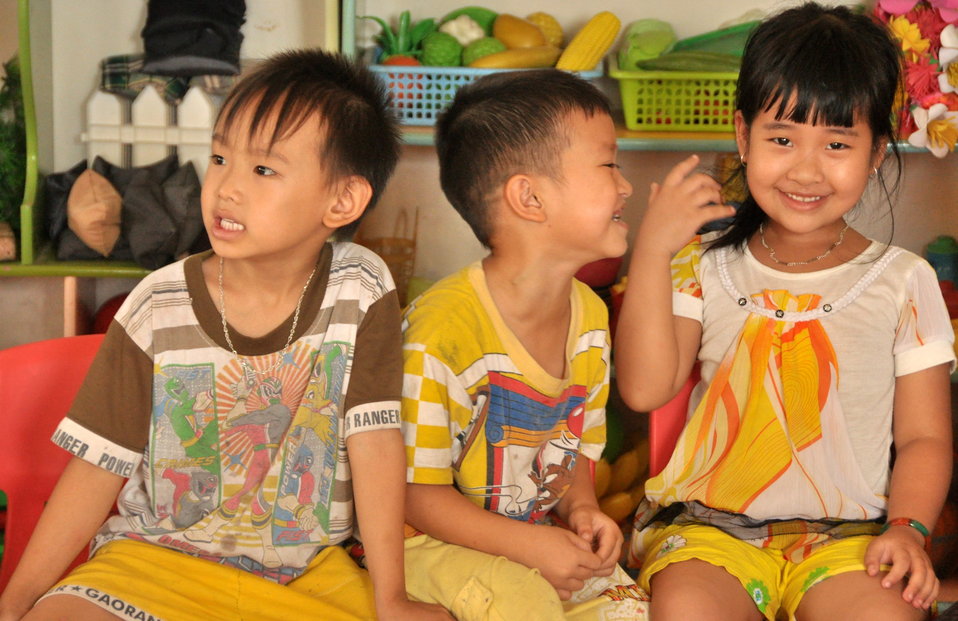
USAID Delivers Deworming Medication to Kindergartners in Nam Dinh Province

Children of Vietnam's Nam Dinh Province receive deworming medicine in a program supported by USAID and World Vision Australia.
June 1, 2013